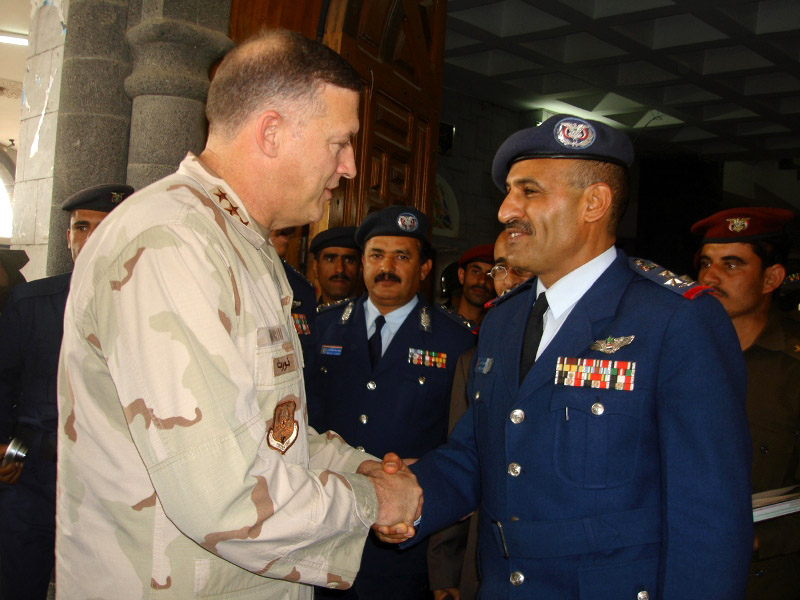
Senior air operations official visits Yemen

Lt. Gen. Gary L. North says goodbye to Yemeni Brig. Gen. Mohammed Saleh Al-Ahmar as he leaves the Yemeni air force headquarters Feb. 7 in Yemen. General North is the commander of U.S. Central Command Air Forces and met with senior Yemini air force officials and the U.S. ambassador to Yemen.